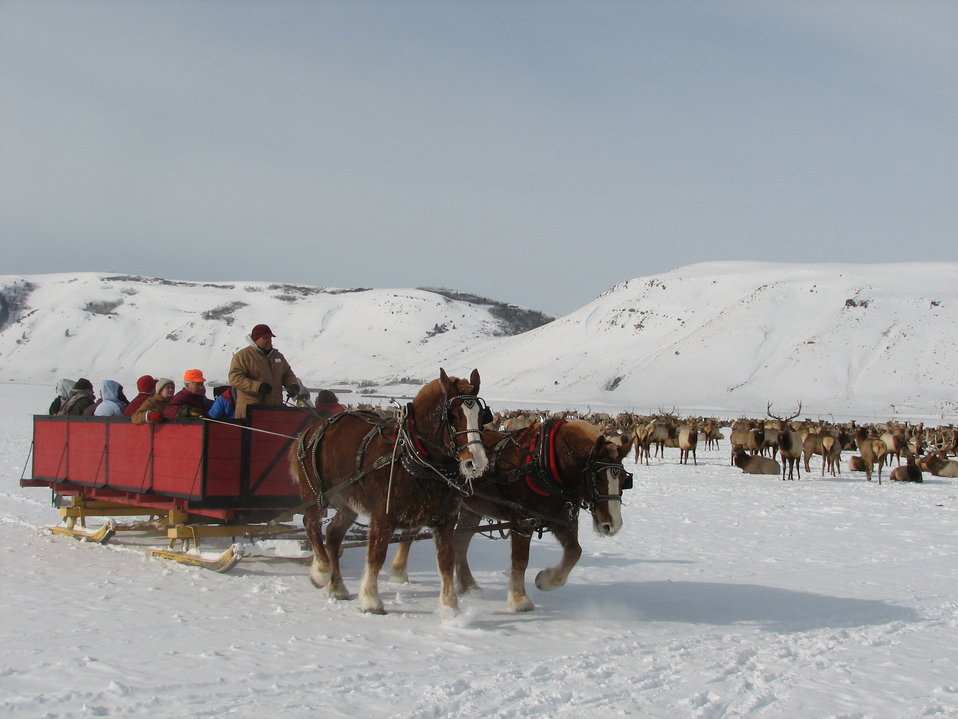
Horse-Drawn Sleigh Passes Elk Herd

Approximately 20,000 people per year enjoy the unique experience of viewing elk from a sleigh on the National Elk Refuge.